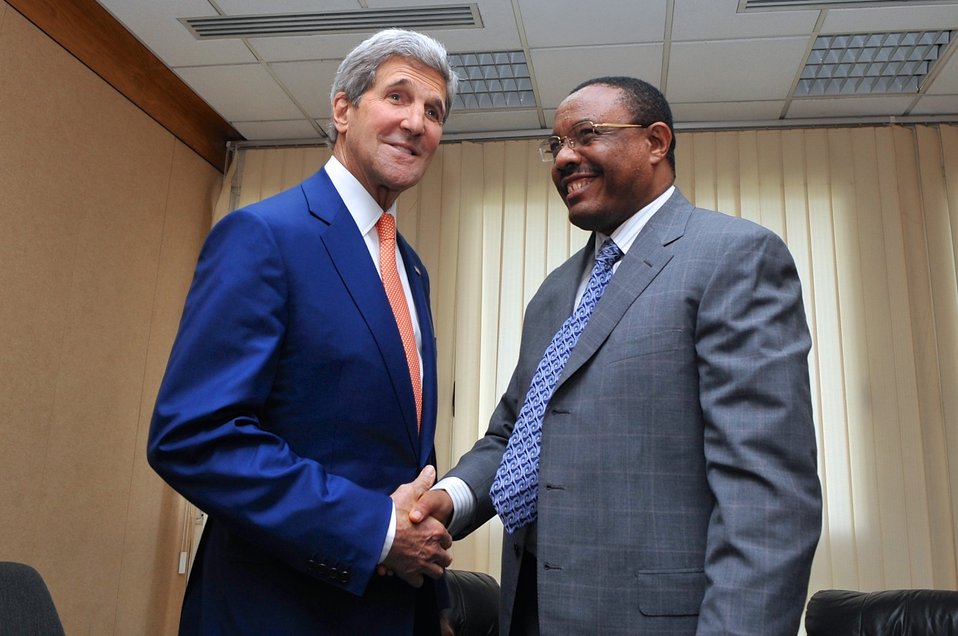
Secretary Kerry Shakes Hands With Ethiopian Prime Minister Hailemariam

U.S. Secretary of State John Kerry shakes hands with Ethiopian Prime Minister Hailemariam at the beginning of a meeting in Addis Ababa, Ethiopia on May 1, 2014.